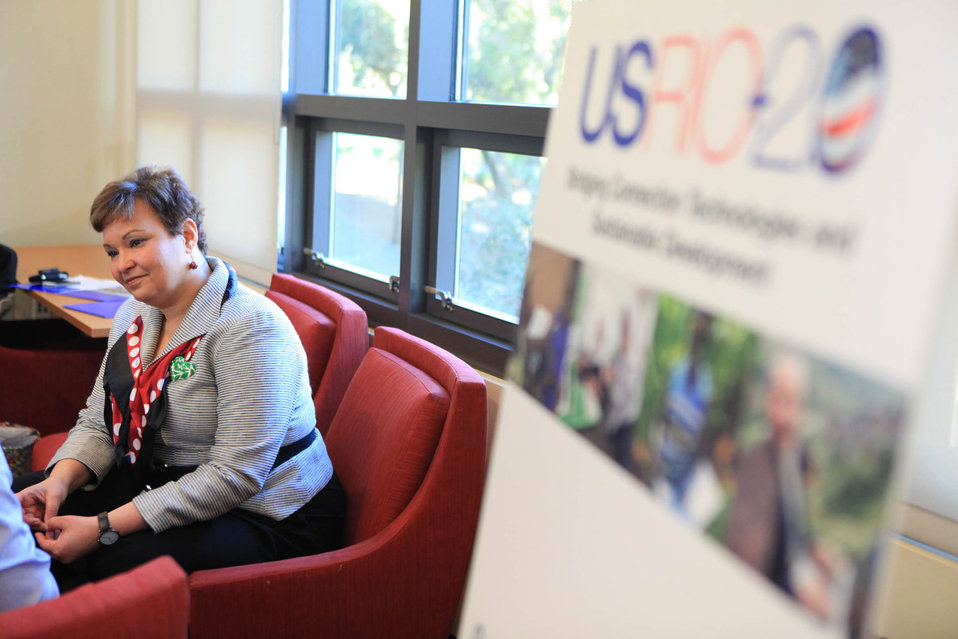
EPA Administrator Jackson Is Interviewed By Frank Munich

Environmental Protection Agency (EPA) Administrator Lisa P. Jackson is interviewed by Frank Munich with klive radio after speaking at the Stanford Graduate School of Business Knight Center in Stanford, California, on February 3, 2012.